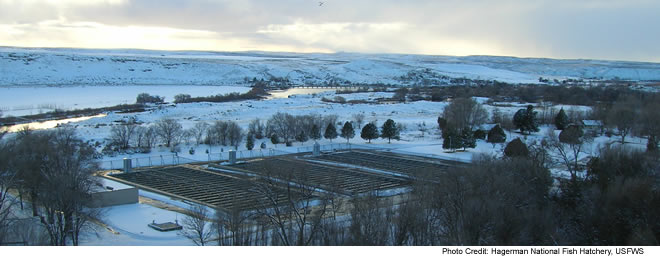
Hagerman National Fish Hatchery

An aerial view of winter at Hagerman National Fish Hatchery, which is located just west of Twin Fall, ID.